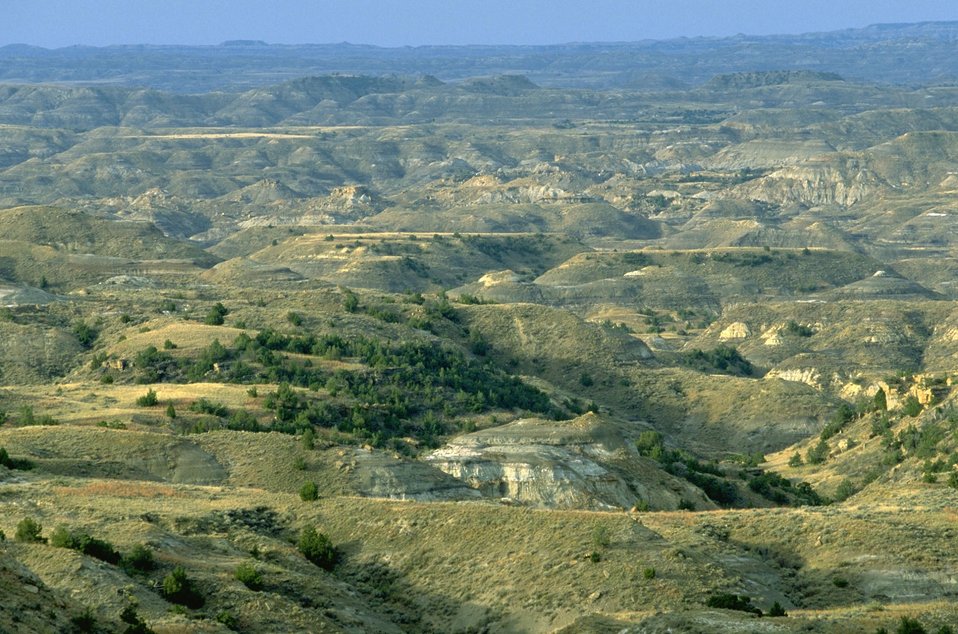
Terry Badlands Wilderness Study Area